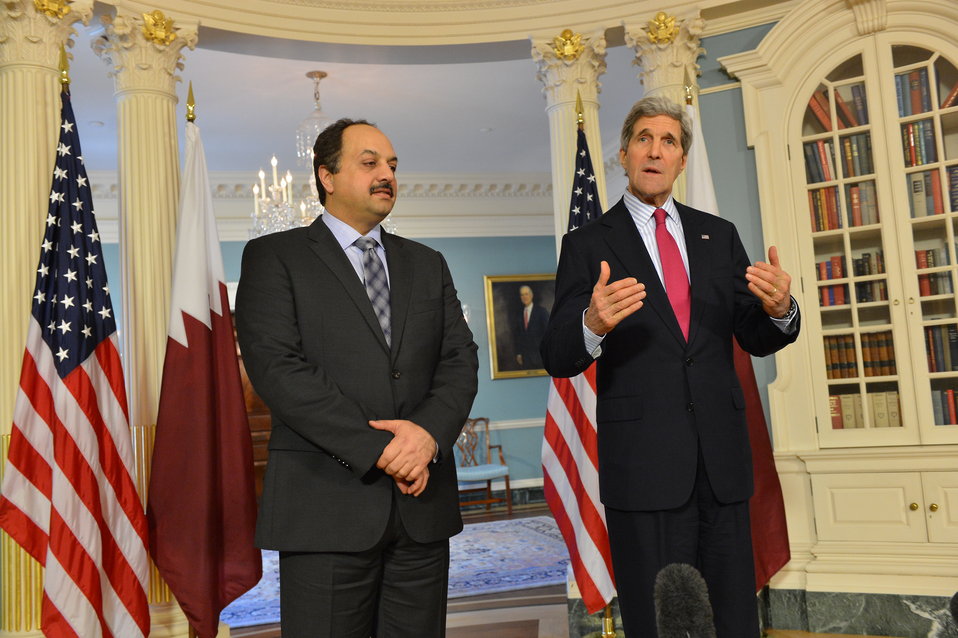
Secretary Kerry Meets With Qatari Foreign Minister Attiya

U.S. Secretary of State John Kerry meets with Qatari Foreign Minister Khalid Al Attiya at the U.S. Department of State in Washington, DC on April 11, 2014.